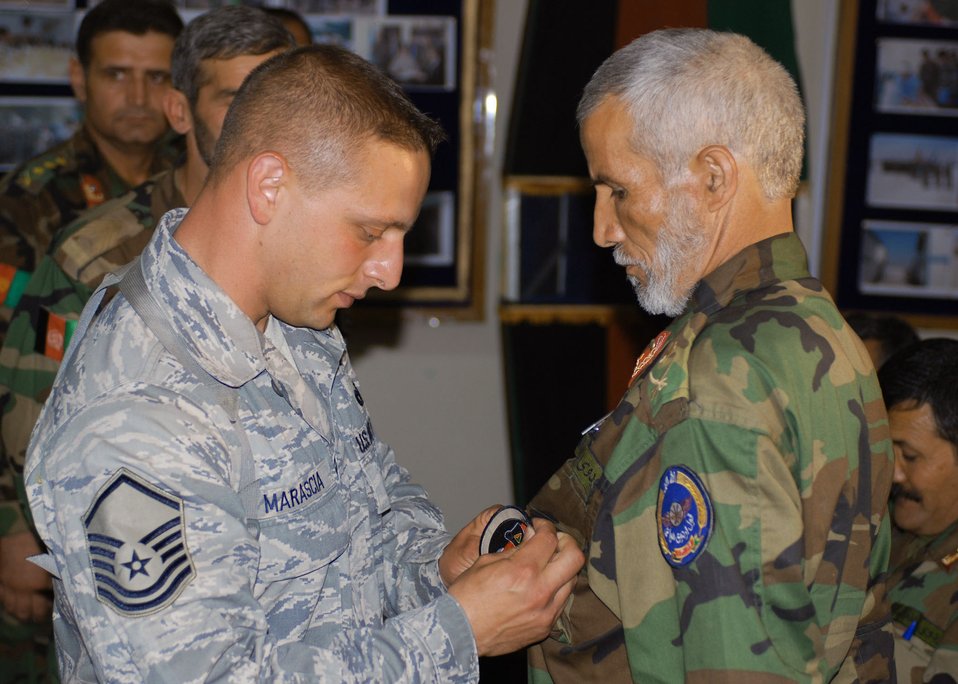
Afghan firefighting graduates ready to respond

Master Sgt. Michael Marascia pins a firefighting badge on 48-year-old Razzuddin at a graduation ceremony of the first Afghan National Army Air Corps Firefighting Class May 29 Kabul, Afghanistan. The 11 graduates will be assigned to the new ANAAC North Side Cantonment at the Kabul International Airport, scheduled to open in October 2008.